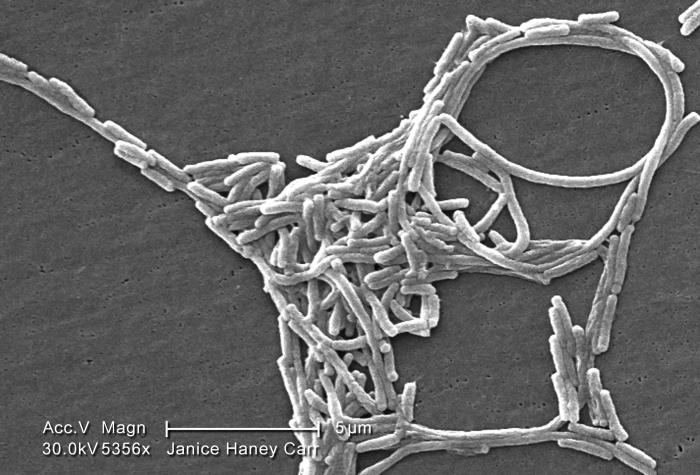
Under a moderately-high magnification of 5356X, this scanning electron micrograph (SEM) depicted a grouping of Gram-negative Legionella pneumophila bacteria. Note that in some of these views you're able to see a number of the flagella emanating from these organisms. Please see PHIL 11092 through 11152 for additional SEMs of these organisms, specifically PHIL 11104 for a colorized version of this image.